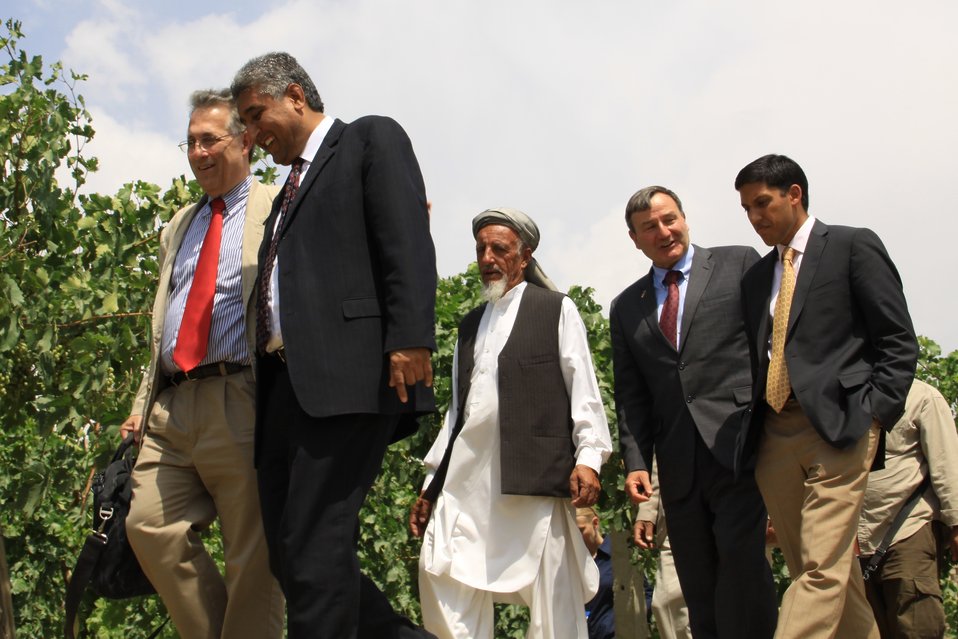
Badam Bagh Farm